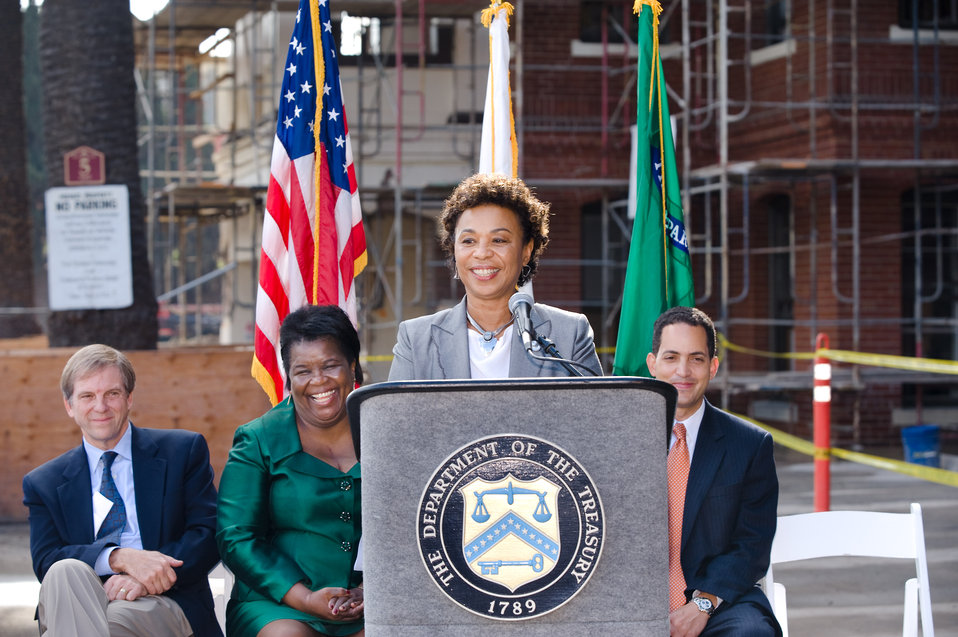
CDFI Awards for the Development of Affordable Housing in Low-Income Communities in Oakland, CA, 10/14/10

Congresswoman Barbara Lee (CA-09) welcomes attendees to Oakland, California at the Treasury’s inaugural Capital Magnet Fund award announcement on October 14, 2010. The event celebrated the 23 Community Development Financial Institutions (CDFIs) and nonprofit organizations across the country that received $80 million in awards for the development of affordable housing in low-income communities.